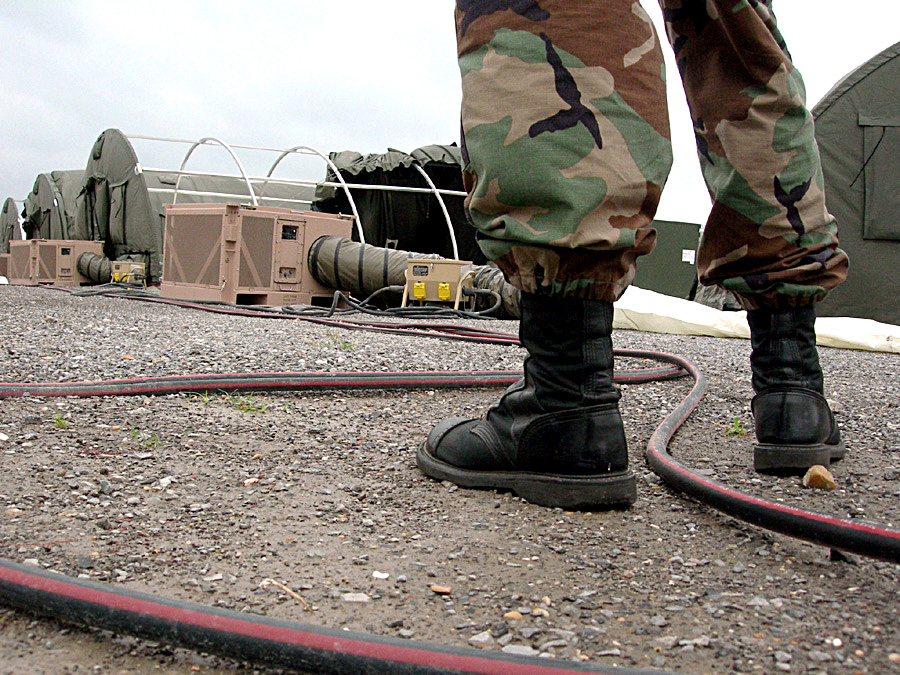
Hurricane Rita damage

NEW ORLEANS - An Airman surveys damage Sept. 24 to an Air Force-built tent city constructed here for Soldiers from the 82nd Airborne Division. Nearly 600 Airmen hunkered down in the Louis Armstrong New Orleans International Airport during the storm. There was only minor flooding at the Air Force camp where Airmen spent the days leading up to the arrival of Hurricane Rita fortifying the base with sandbags.